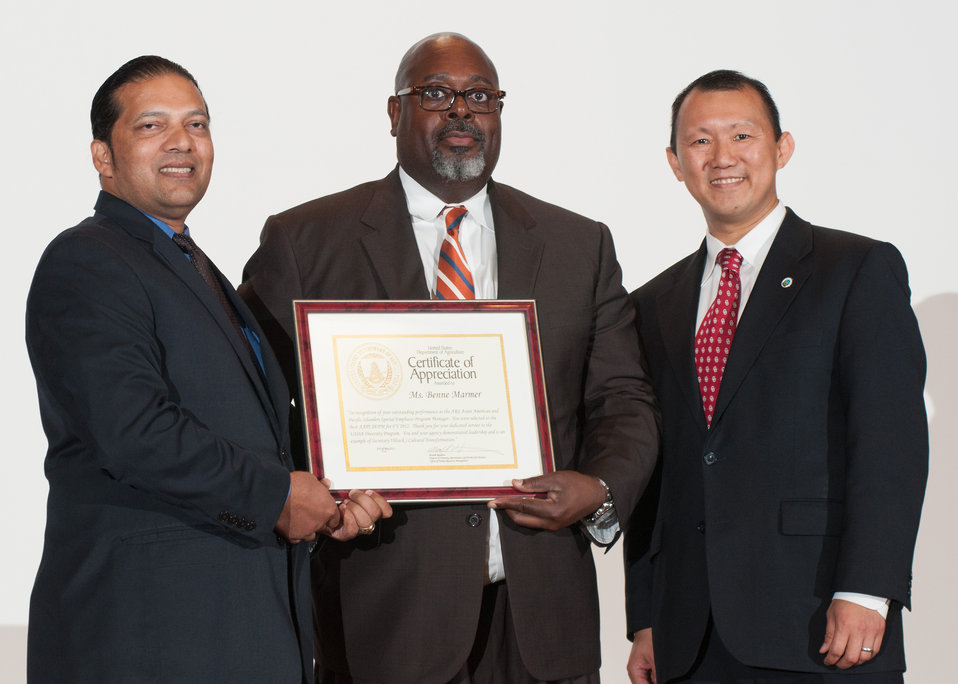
U.S. Department of Agriculture’s (USDA) Asian American and Pacific Islander Diversity and Inclusion Program Manager Frederick Cheng (right) and Dr. Rasika Tripathy (left) present an USDA Certificate of Appreciation to Agricultural Research (ARS), Service Civil Rights Director Don McLellan who receives it on behalf of Ms. Benne Marmer for outstanding performance as a Asian Americans and Pacific Islander (AAPI) Special Emphasis Program Manager, during the USDA Asian Pacific American Heritage Month Observance, at the USDA headquarters in Washington, D.C., on Thursday, May 23, 2013. This year’s theme is “Building leadership; Embracing the Cultural Values and Inclusions.”